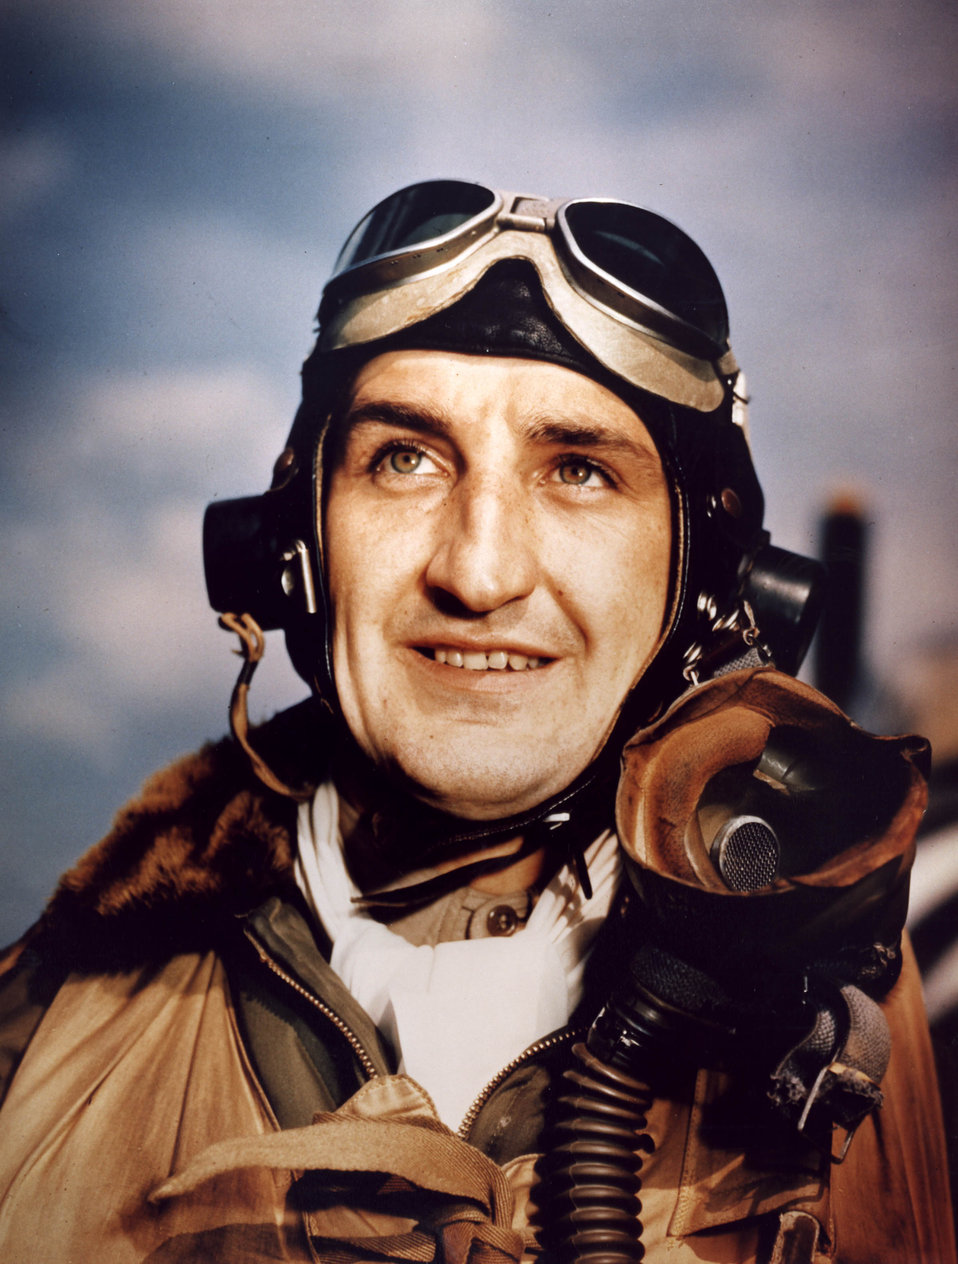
Francis S. Gabreski

1940's -- Lt. Col. Francis S. Gabreski, with 56th Fighter Group, leading ace of the 8th Air Force. P-47 Pilot.